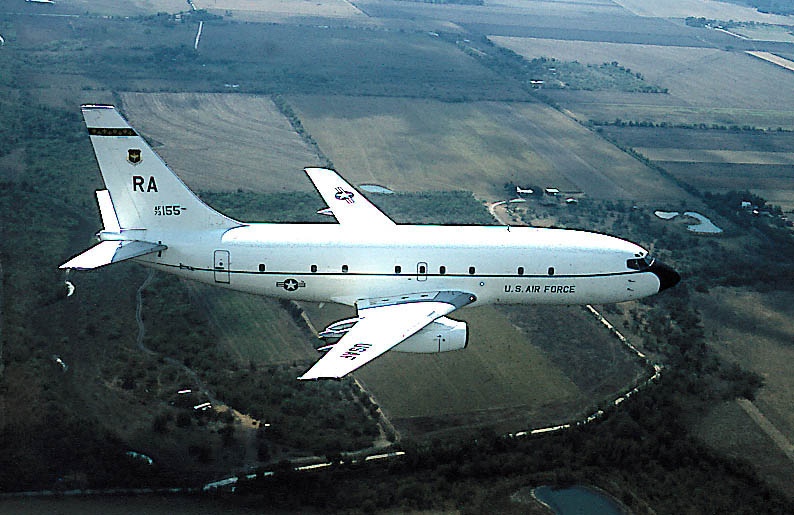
T-43

FILE PHOTO -- The T-43A is a medium-range, swept-wing jet aircraft equipped with modern navigation and communications equipment to train navigators for strategic and tactical aircraft.
The T-43A is primarily used in the Air Force's undergraduate navigator training program. Several T-43s are configured for passengers and provide operational support to assigned commands and the Air National Guard.